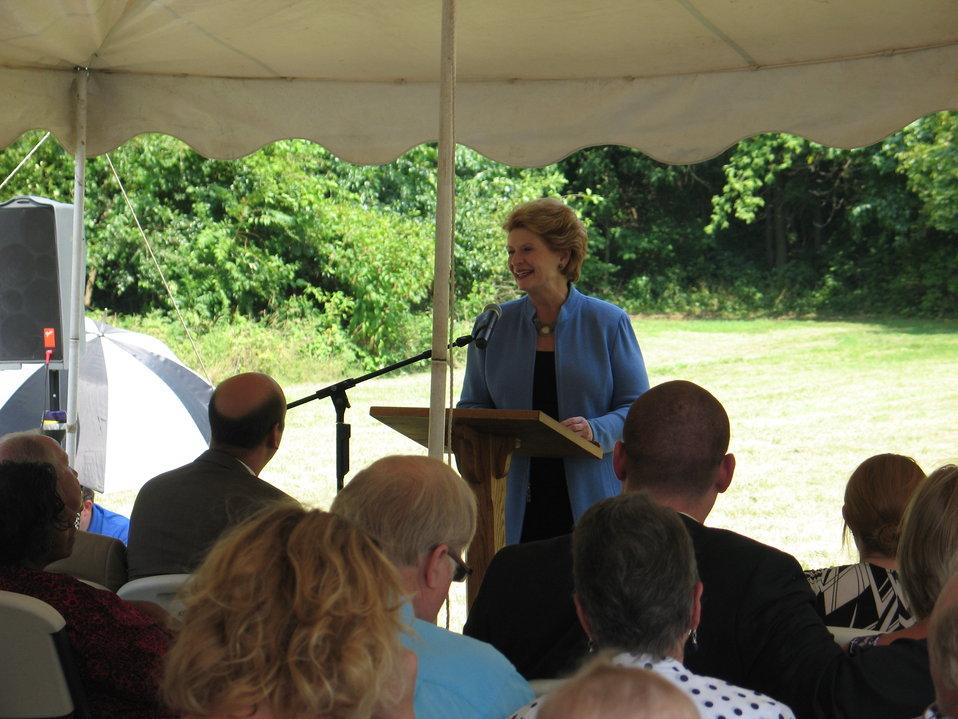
Cassopolis 018

Michigan Senator Debbie Stabenow speaks at the ground-breaking for the new U.S. Department of Agriculture (USDA) supported Cassopolis Family Clinic in Michigan.